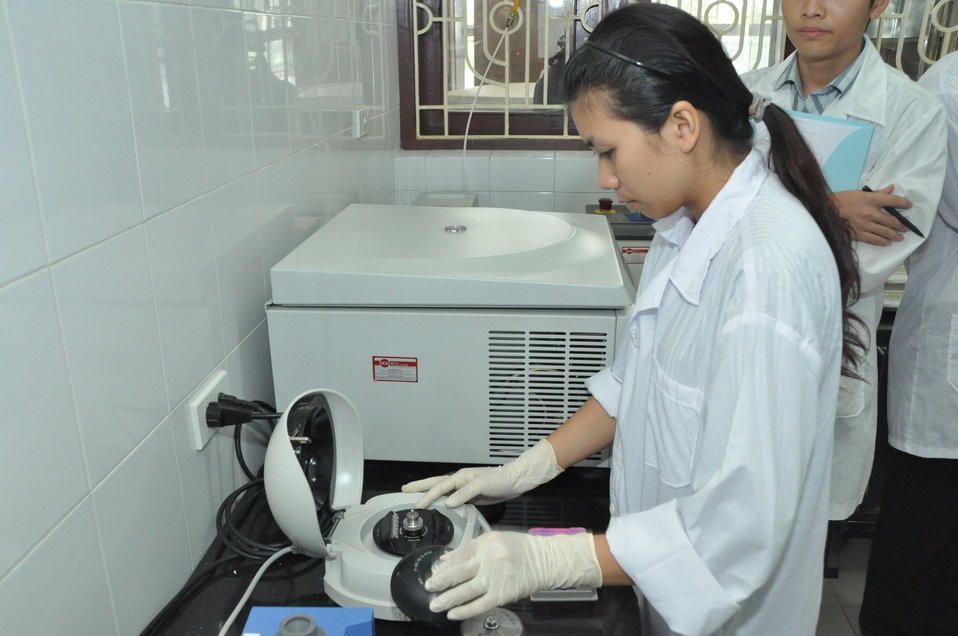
Animal virus detection lab training in Hanoi

Trainee learns how to detect viruses in Hanoi under a USAID program.